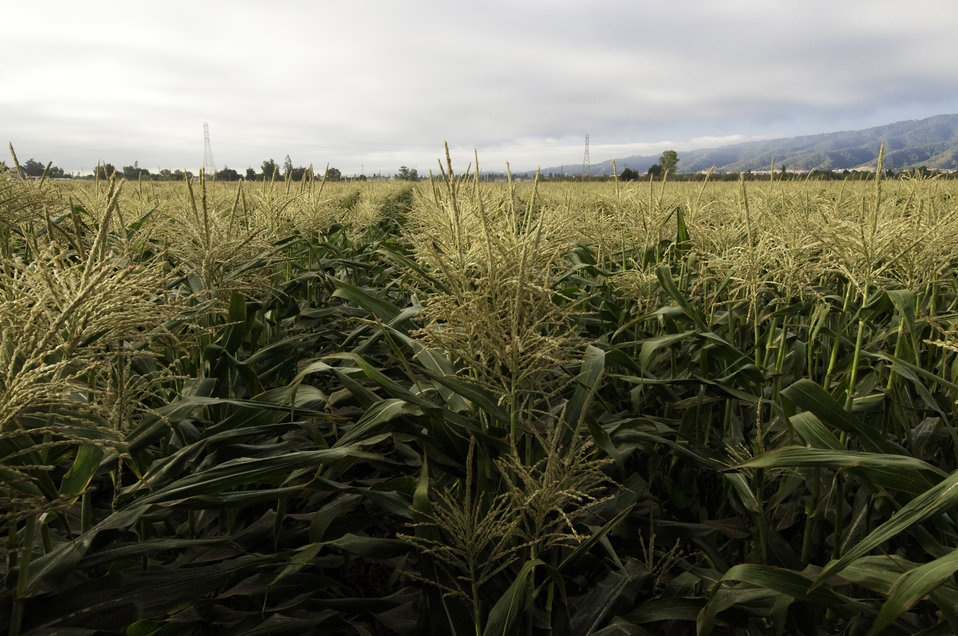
Cornfields ready for harvesting on Uesugi Farms in Gilroy, CA on Wednesday, Aug. 28, 2013.